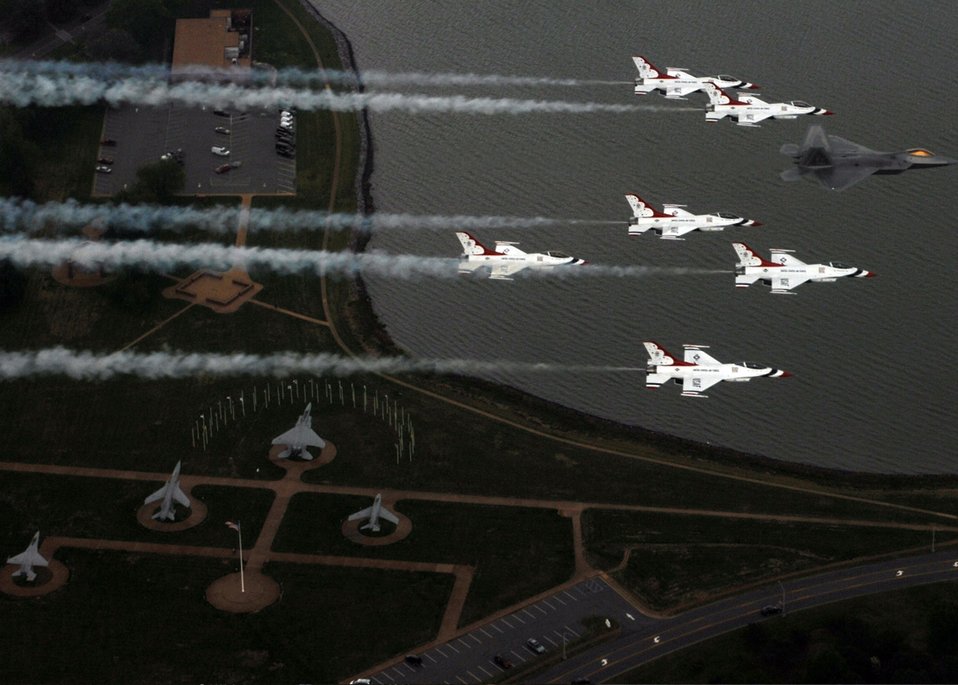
Raptor leads Thunderbirds over Langley

Maj. Max Moga, F-22A Raptor demonstration pilot, leads six Thunderbird F-16s in formation over Freedom park at Langley Air Force Base, Va., during their practice day April 27 for the Airpower Over Hampton Roads air show scheduled April 28-29. This year the Thunderbirds and the F-22 demonstrations commemorate the 60th Anniversary of the United States Air Force.